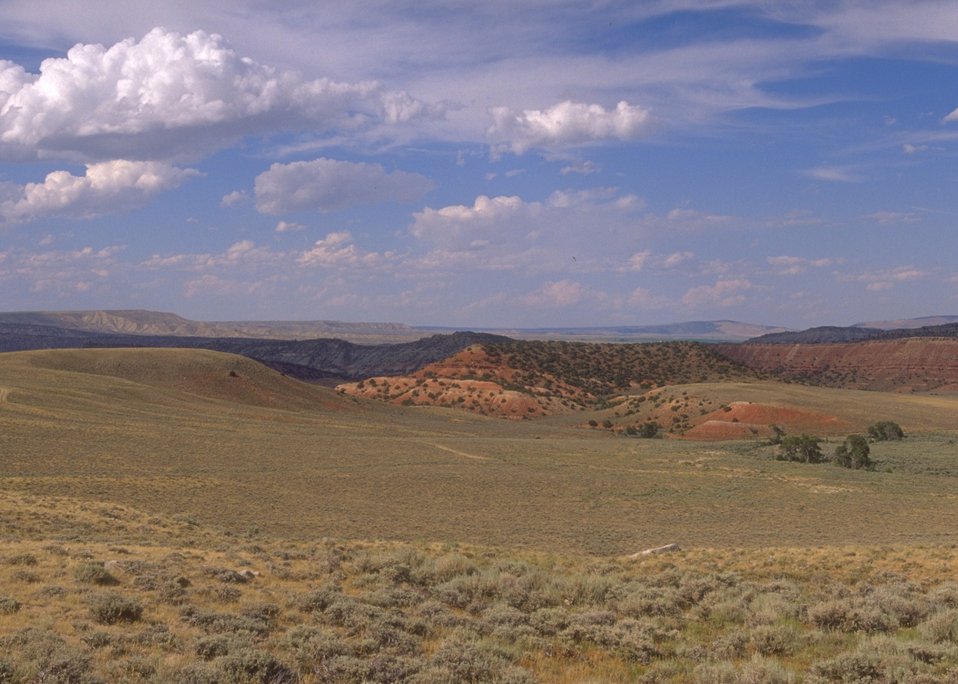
Landscape along the Alcova/Seminoe Back Country Byway, Rawlins Field Office.